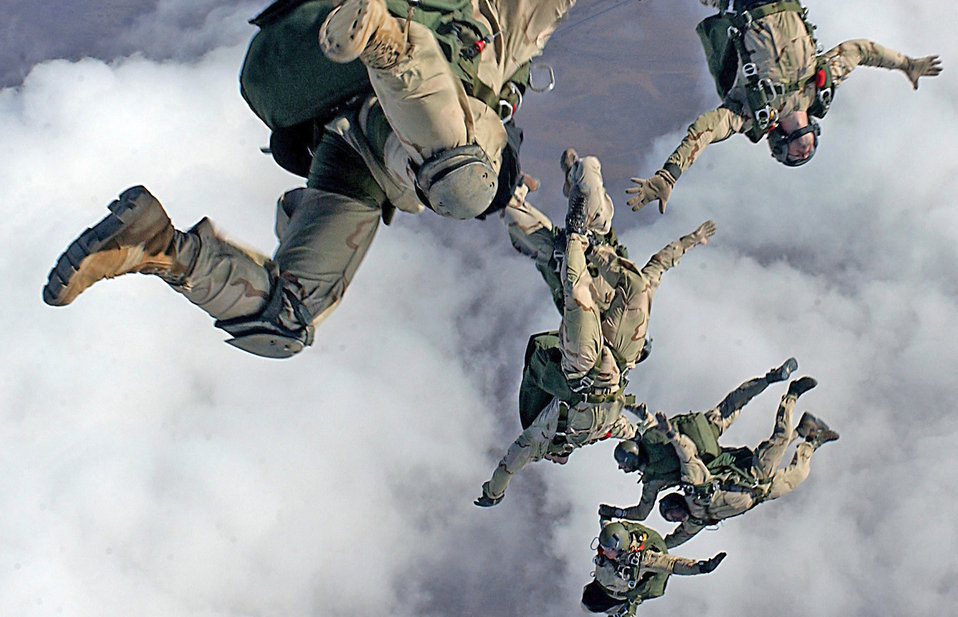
Air Force officials adopt personnel recovery as core function

Pararescuemen jump from a HC-130P/N for a high-altitude, low ppening free fall drop from 12,999 feet in support of Operation Enduring Freedom. The Airmen are assigned to the 38th Rescue Squadron and the 58th Rescue Squadron from Nellis Air Force Base, Nev.